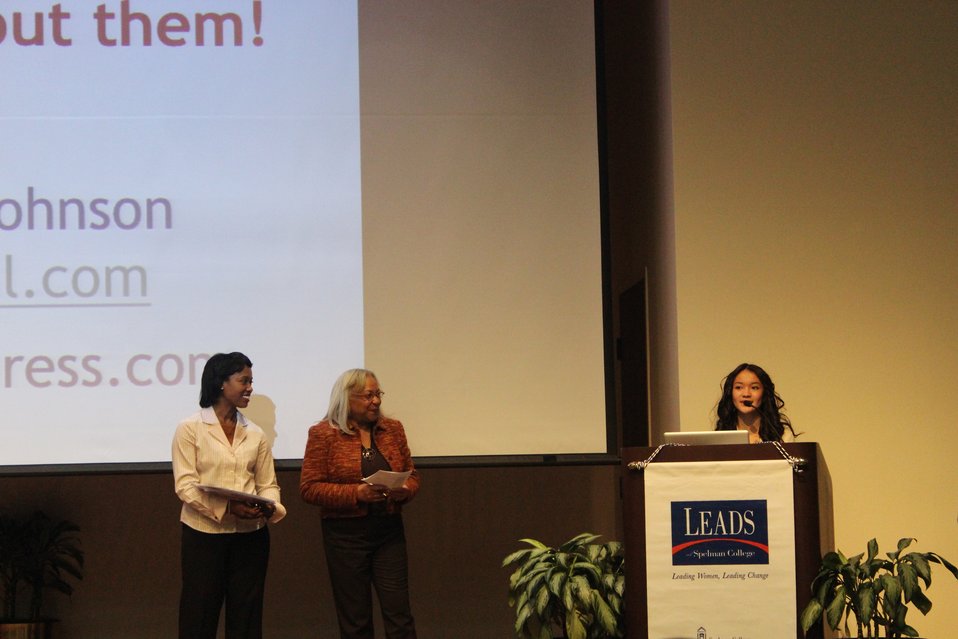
Spelman Girls Institute Nov 2012

Dot Harris, Director of the Office of Economic Impact and Diversity, is introduced at the Spelman Girls Institute.